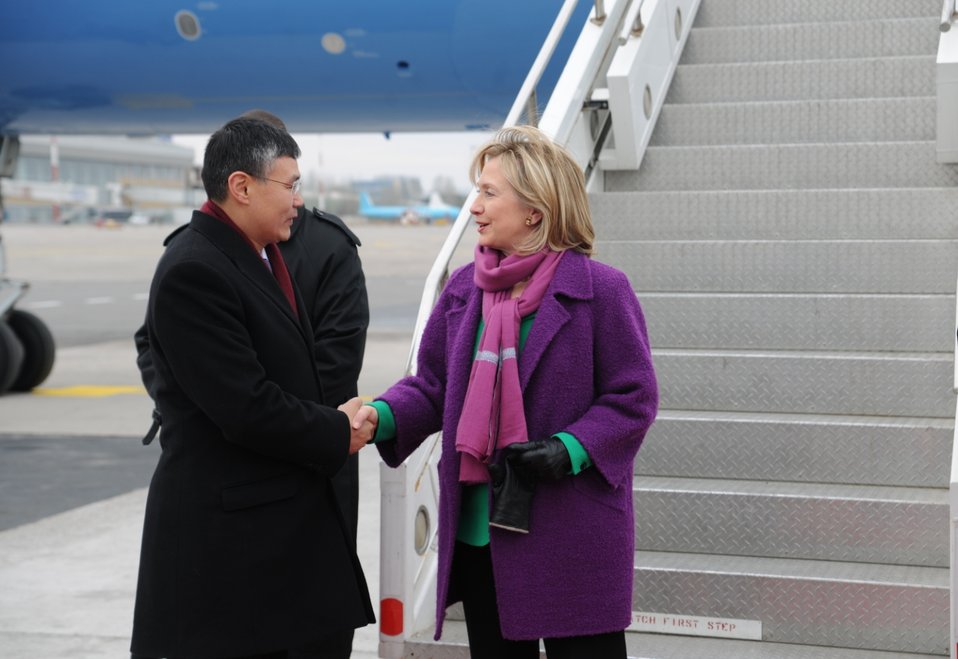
Secretary Clinton Is Greeted By Kyrgyz Chief of State Protocol of MFA Tentimishev

U.S. Secretary of State Hillary Rodham Clinton is greeted by Kyrgyz Chief of State Protocol of the Ministry of Foreign Affairs Maksat Tentimishev in Bishkek, Kyrgyzstan, on December 2, 2010.